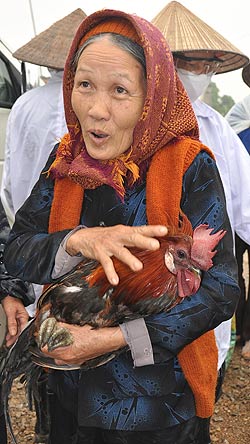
USAID supports the Government of Vietnam's efforts to control avian influenza in Vietnam.

A poultry farmer in Vietnam's Ha Nam Province has her chicken vaccinated to help curb the spread of bird flu.